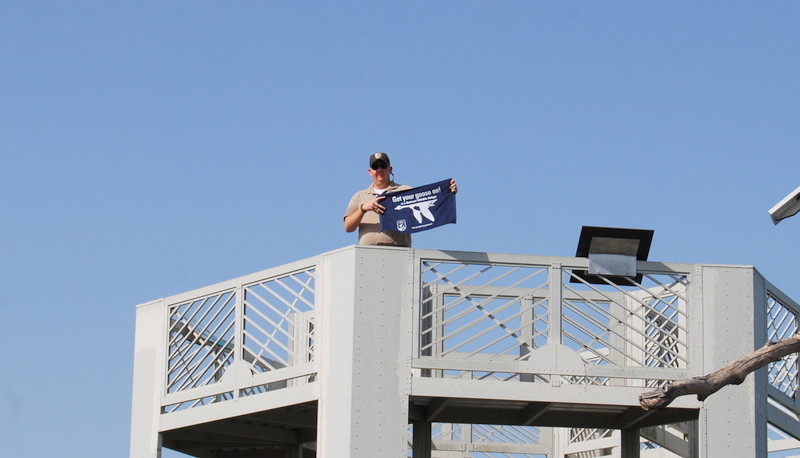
Get Your Goose On!

Photo taken atop the 45-foot tower at Santa Ana National Wildlife Refuge in southern Texas.